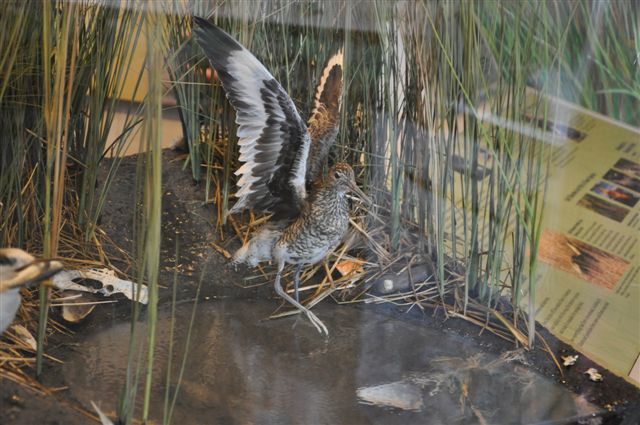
Diorama display

A willet on display at the new salt marsh diorama in the newly renovated visitor center at Sachuest Point National Wildlife Refuge (re-opened on August 24, 2012).